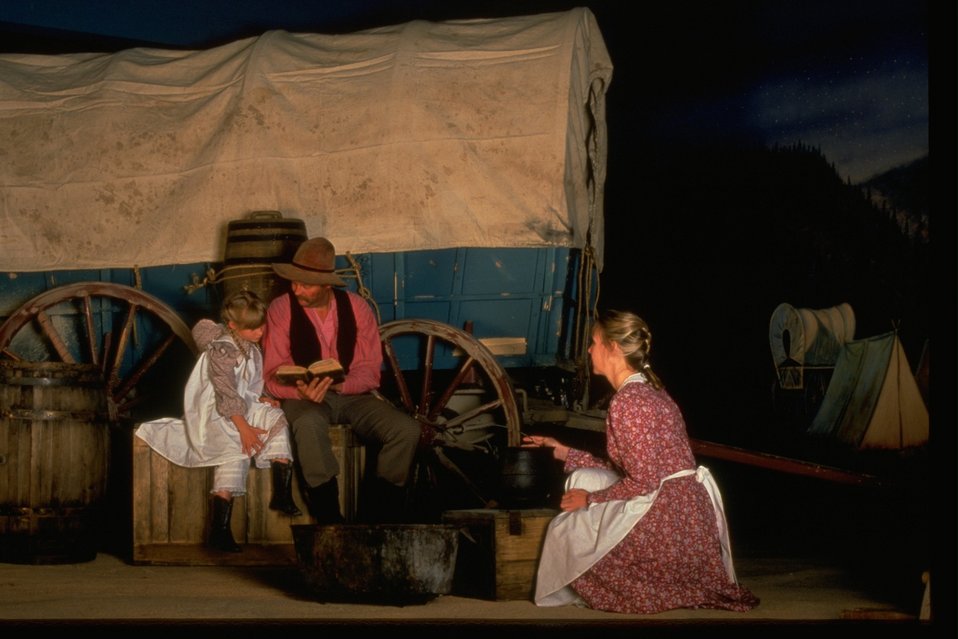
Re-enactors in a NHOTIC exhibit.